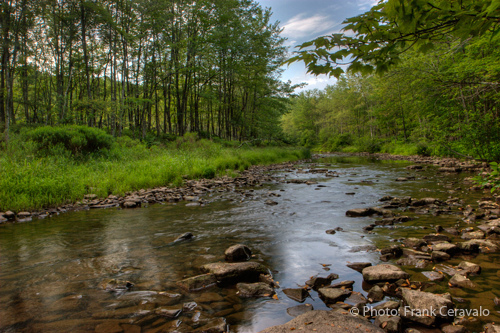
Blackwater River along Beall South Loop Trail

The shallow and rocky Blackwater River, shown here as it parallels the Beall South Loop Trail, tumbles over river rock.